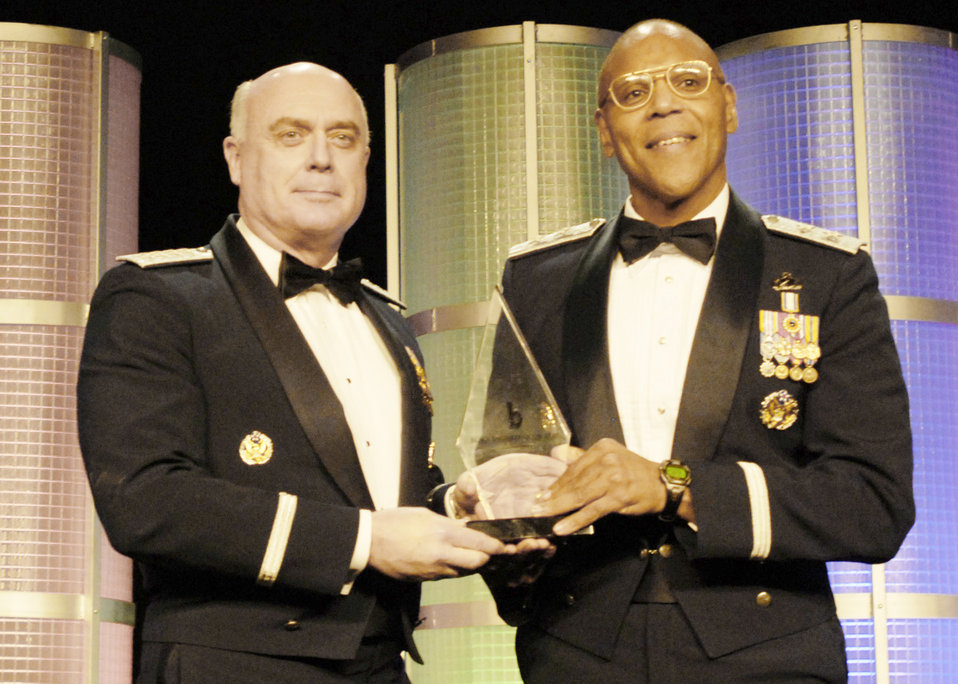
BEYA presentation

Air Force Vice Chief of Staff Gen. Carrol H